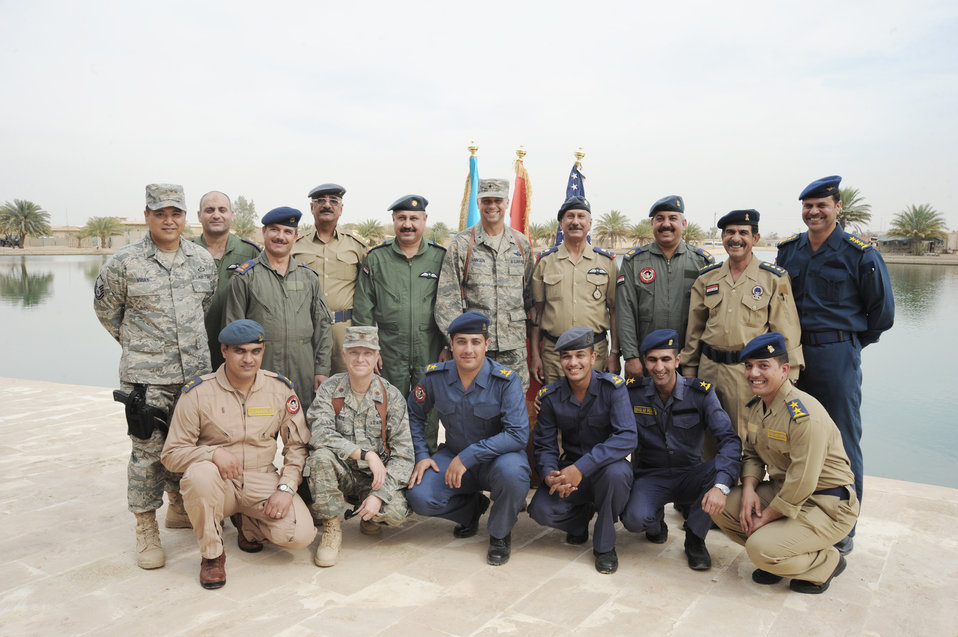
Iraqi weathermen graduate

Iraqi air force officers pose with their U.S. Air Force instructors at Camp Victory, Iraq, March 25, 2010, following their graduation from a 52-day meteorology course. The graduates will be sent to different locations throughout Iraq for 30 days of on-the-job training. Once the training is complete, some of the weather advisory officers will become instructors while others will begin their weather advisory mission for the Iraqi military.